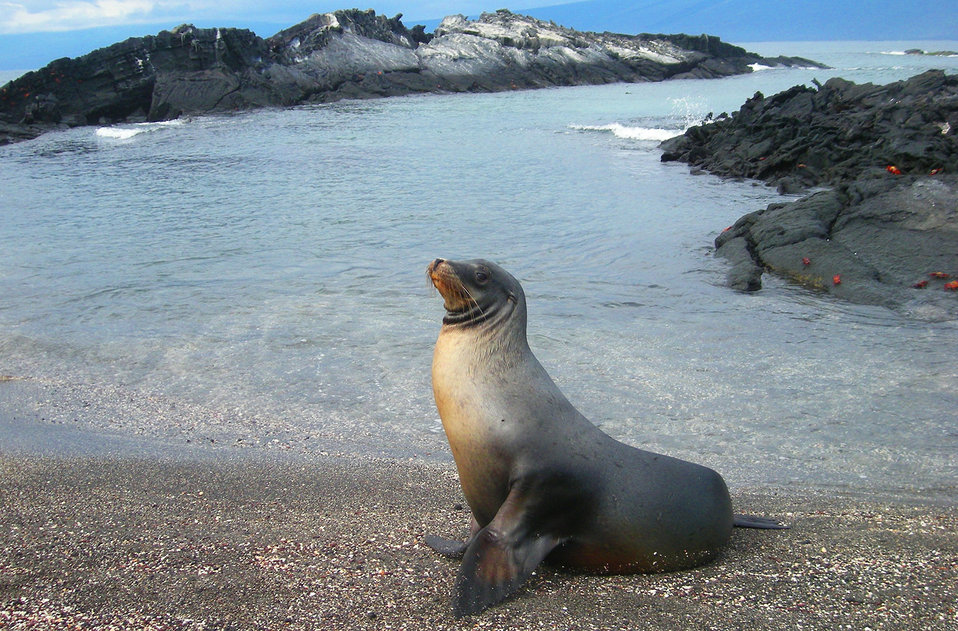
Sea lion

Galapagos, april 2011.